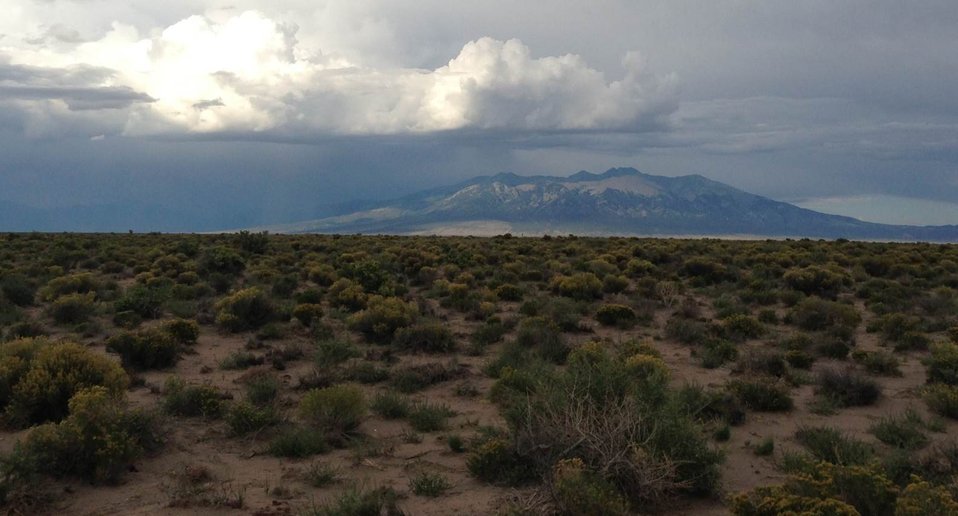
Arapaho National Wildlife Refuge